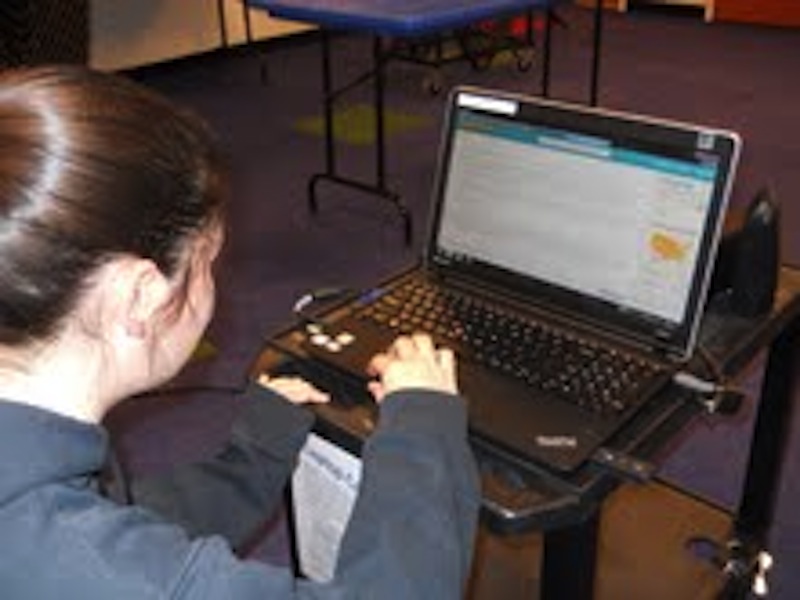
Chat Day, National Drug Facts Weeks 2013

Perrysburg, Oh. NDFW 2013 Chat Day event with Prevention Partners Program.